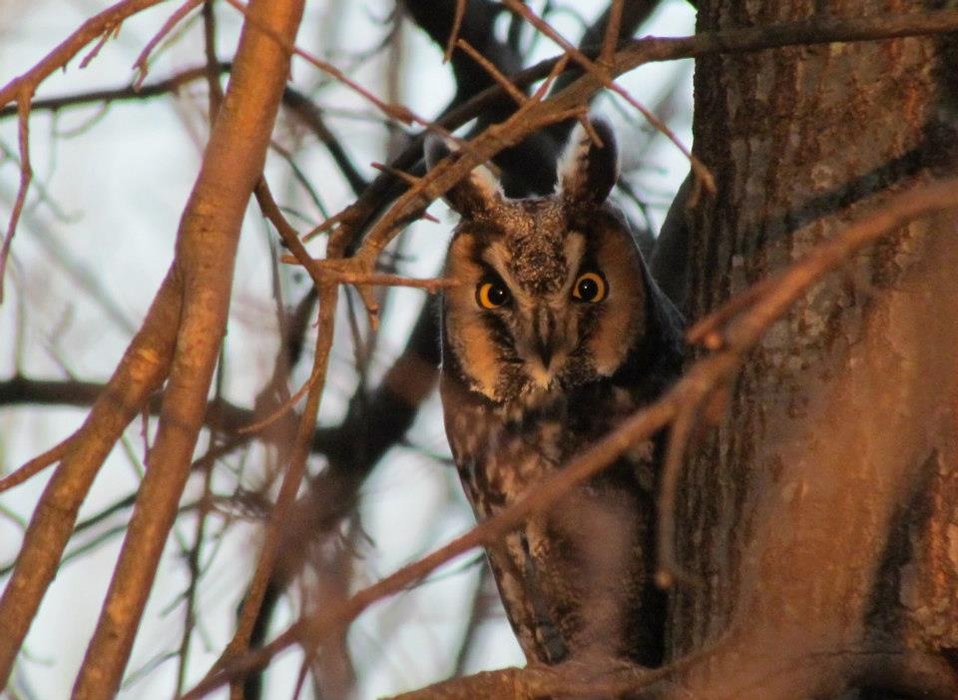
Owl

Great Swamp National Wildlife Refuge, NJ Credit: Dave Sagan/USFWS